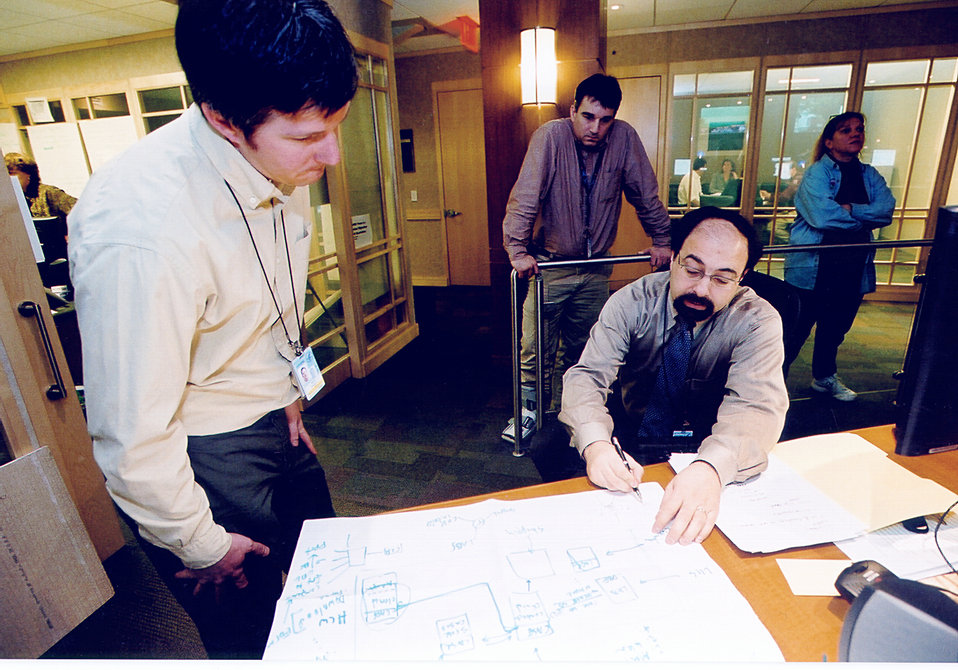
This is Dan Reed and Dale Nordinberg inside the CDC's new Emergency Operations Center (EOC).